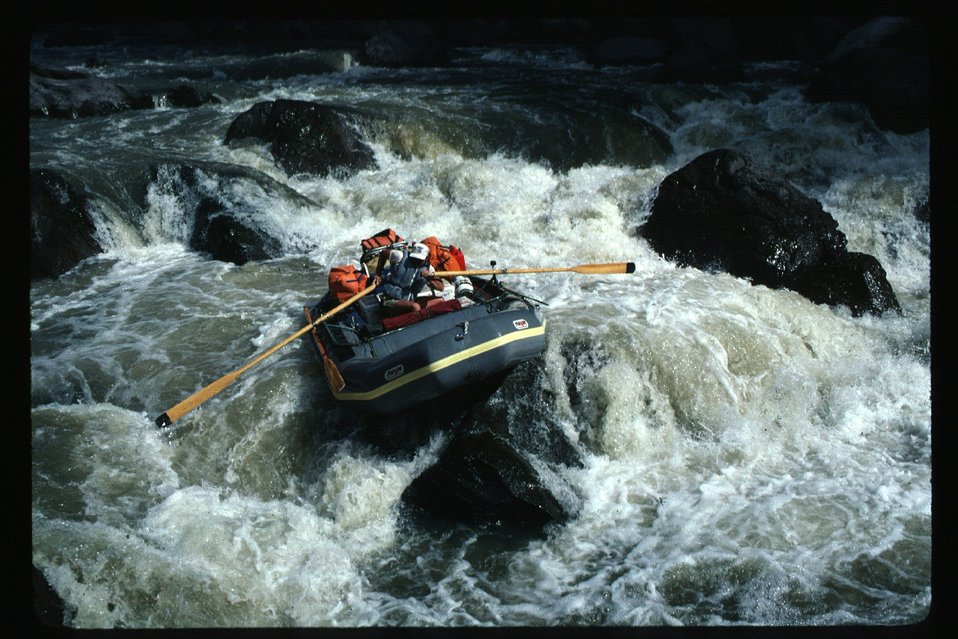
Recreation Middle Owyhee River Stuck on Widowmaker Rapids Owyhee Field Office LSRD Lower Snake River District